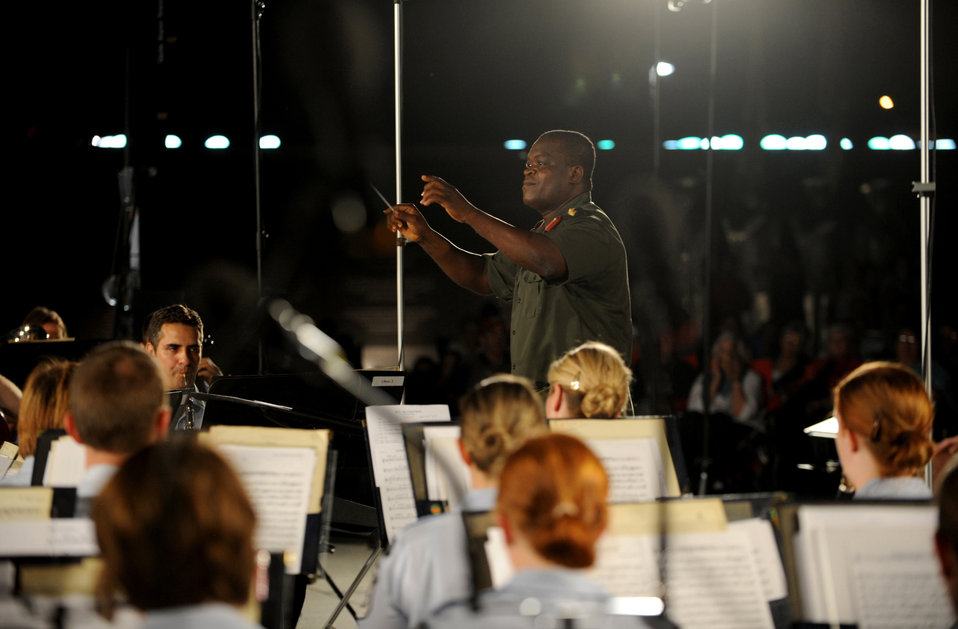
Air Force Band

Col. Sampson Paa-Kwesi Ebonyi, director of music and bands of the Ghana armed forces, was a guest conductor for the U.S. Air Force Band as they played for bystanders at the Air Force Memorial on August 24, 2012 in Washington D.C. The USAF band hosts this concert every Tuesday from June 5-August 28, 2012.